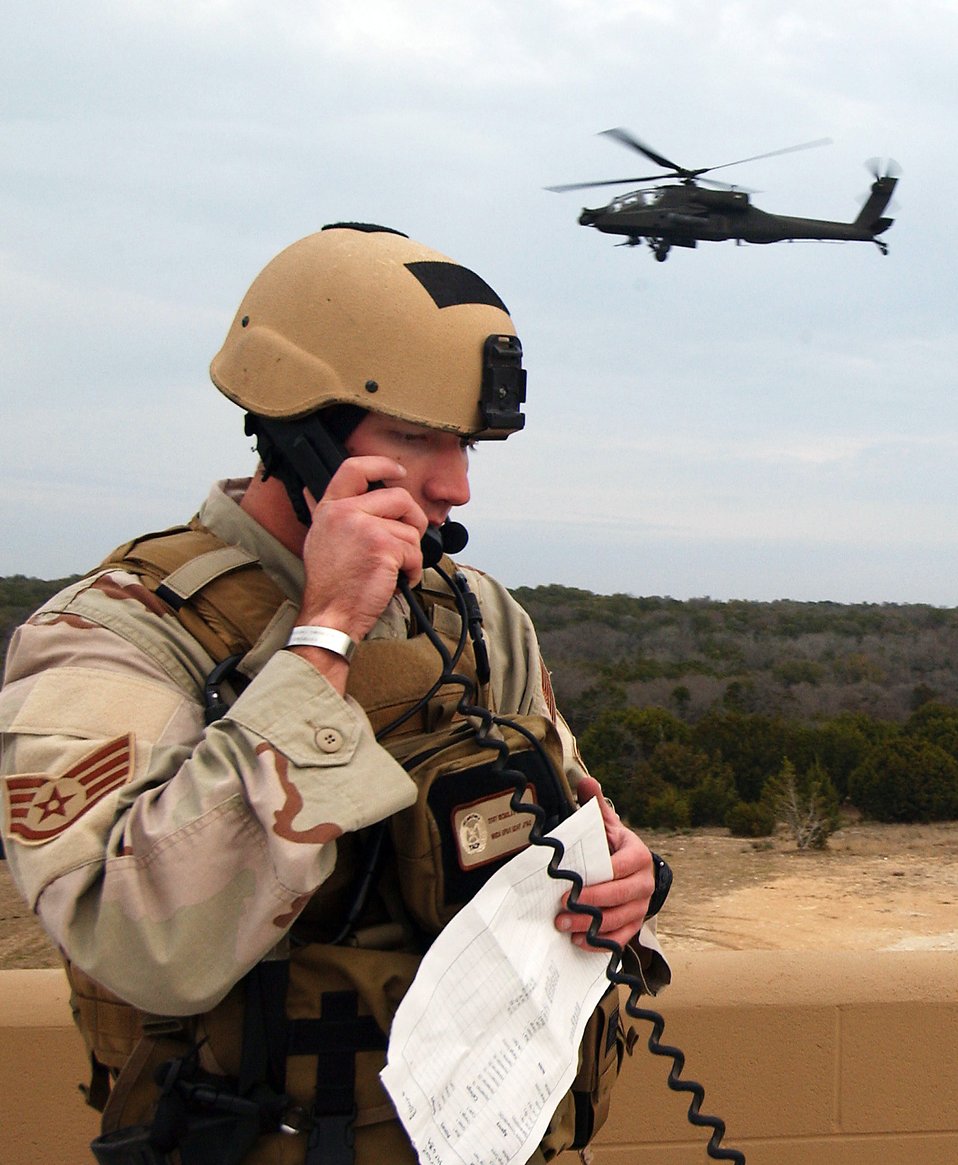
Air Force still hiring

Staff Sgt. Nicholas Elek, a joint tactical air command and control journeyman, coordinates close-air support with the pilot of an Apache helicopter during a training exercise. JTAC is one of several enlisted special tactics career fields qualified high school graduates can choose from when joining the Air Force. Sergeant Elek is with the 11th Air Support Operations Squadron at Ft. Hood, Texas.